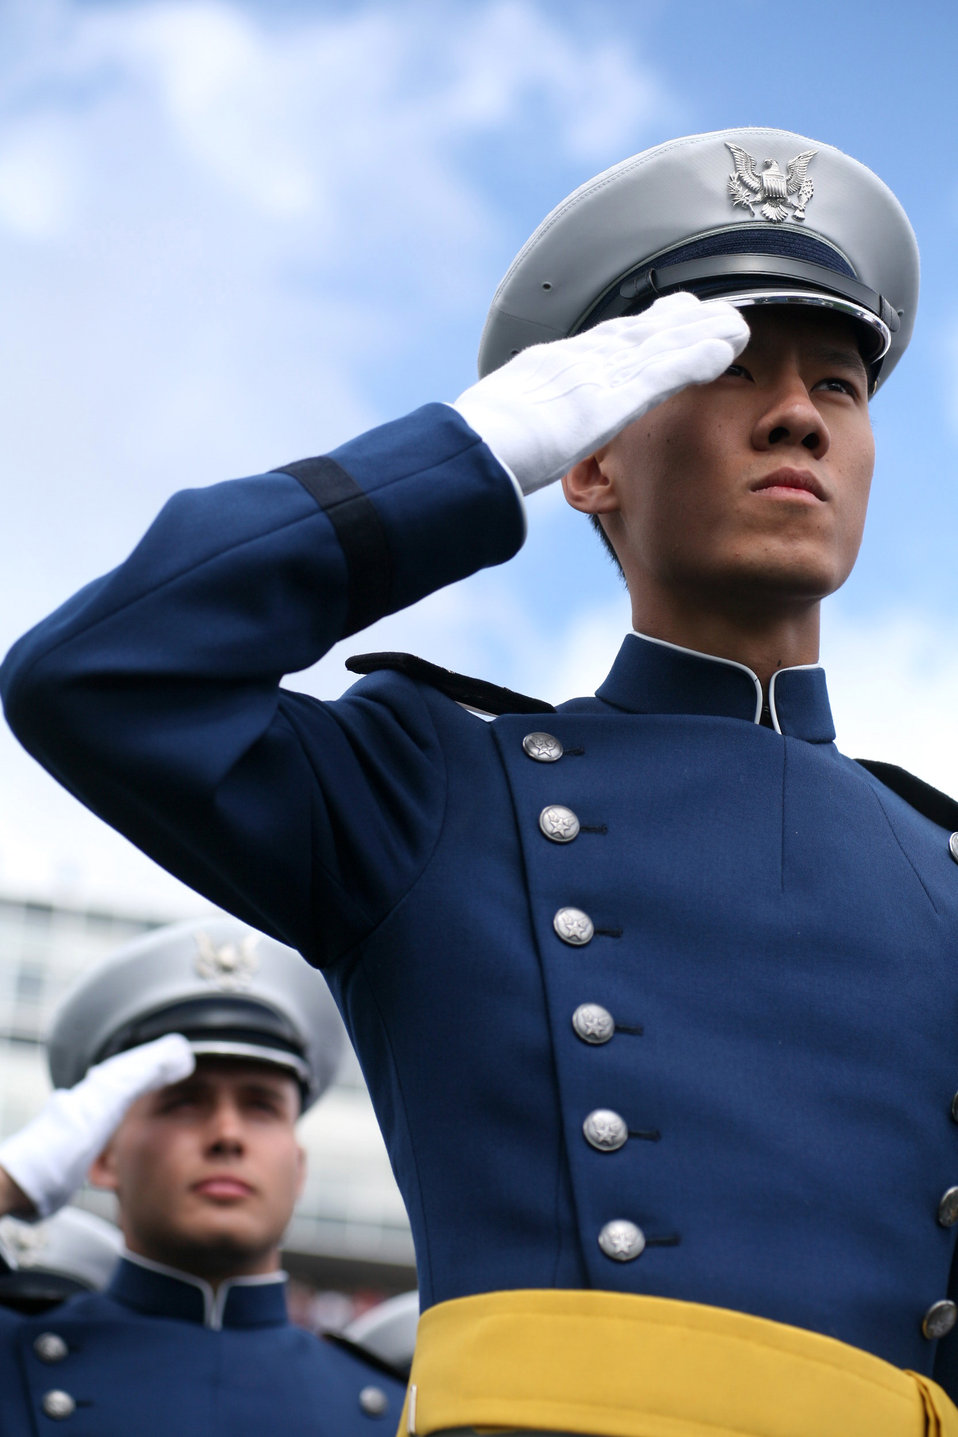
Rumsfeld voices confidence in academy graduating class

Newly commissioned second lieutenants salute during the U.S. Air Force Academy's 2006 graduation ceremony in Colorado Springs, Colo., on Wednesday, May 31, 2006. The Class of 2006 totaled 879 graduates, with 491 of them slated for undergraduate pilot training. Secretary of Defense Donald H. Rumsfeld was the guest speaker at the commencement.